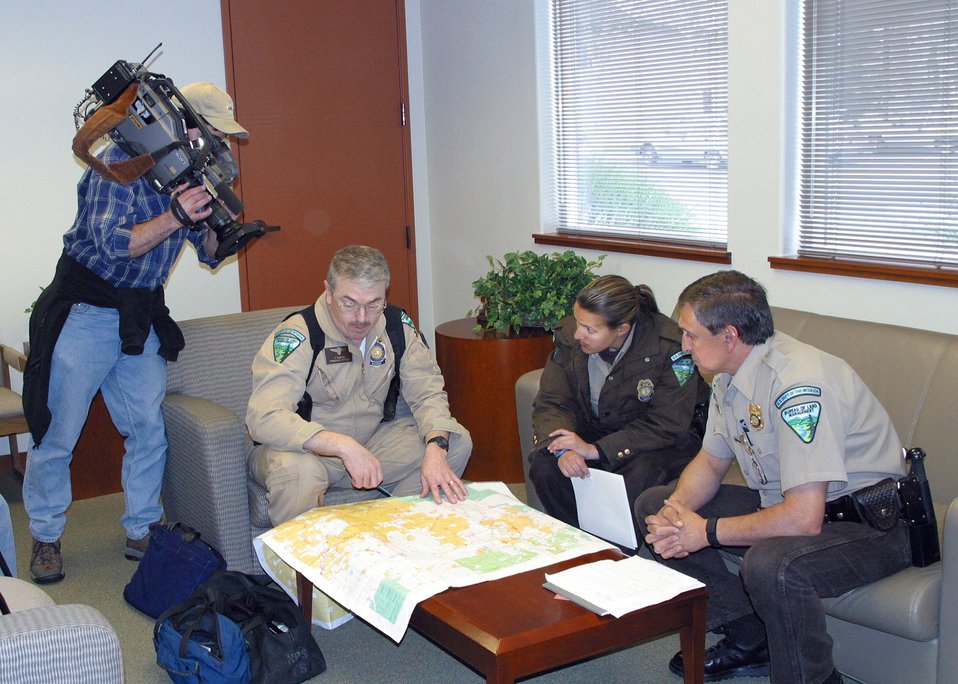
OPB videographer captures footage of Tom Teaford, BLM Ranger, Katy Spenger, BLM Ranger, and Roger Crifafi, BLM Ranger discussing areal patrol of BLM public lands in Central Oregon at the Bend, Oregon airport. April 12, 2003. Photo John Craig